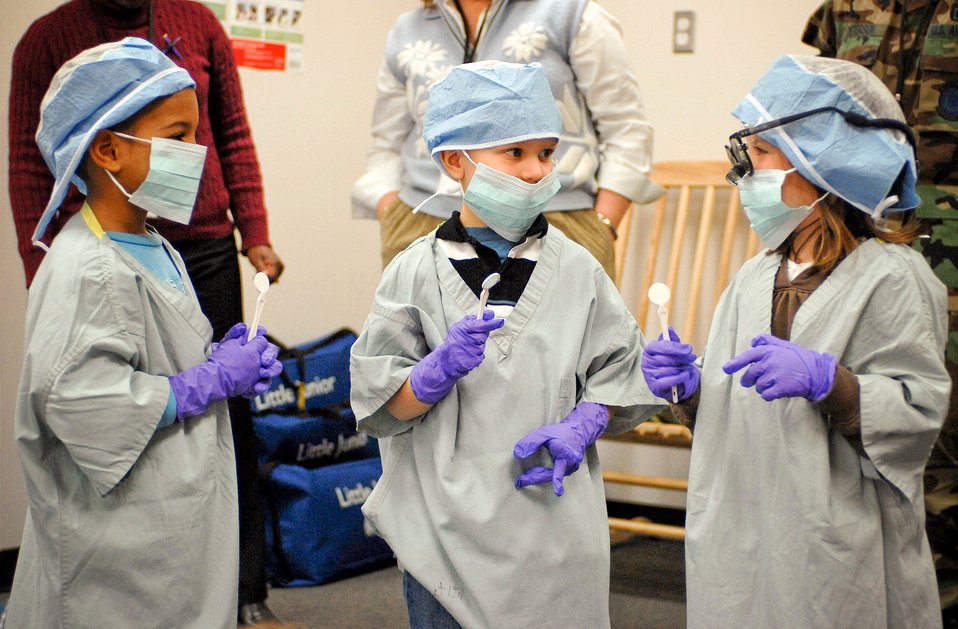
Future dentists confer

Dressed up as dentists, a group of children admire their new look during a health and hygiene presentation Feb. 12 at the Child Development Center at Langley Air Force Base, Va. The class given by the 1st Dental Squadron stressed teeth and mouth cleanliness as well as good eating habits.